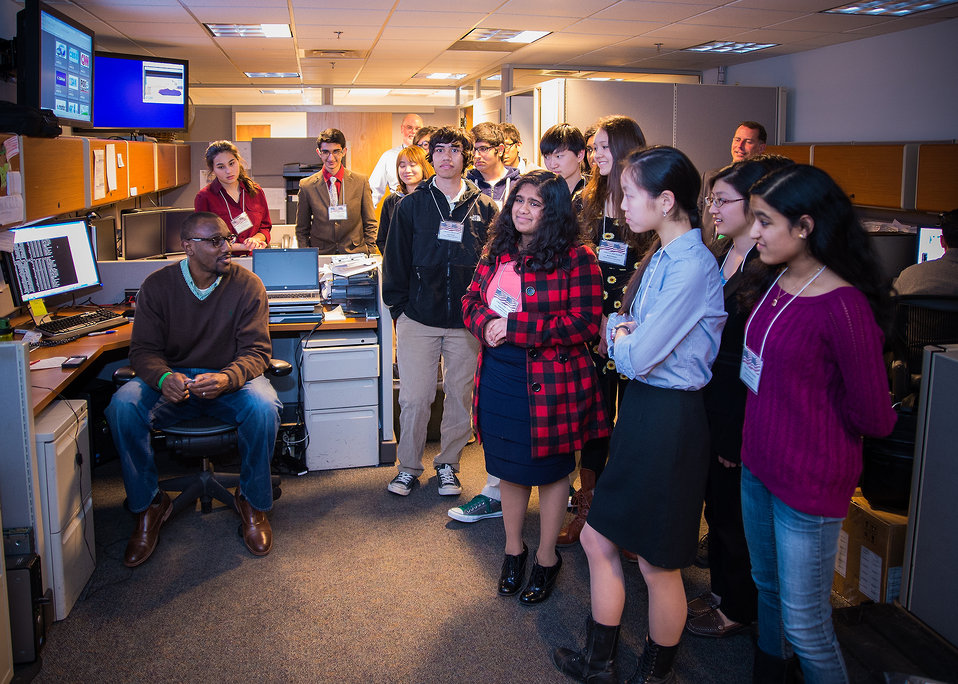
Students from Thomas Jefferson High School of Science and Technology in Alexandria, VA were able to tour the United States Department of Agriculture Information Technology Center during the U.S.Department of Agriculture (USDA), Office of the Chief Information Officer (OCIO) IT Job Shadow Day, Tuesday, Mar. 25, 2014. The OCIO IT Job Shadow Day hosts students from local high schools in the Washington, D.C. area annually with IT professionals and agricultural specialists from a variety of mission areas at USDA.